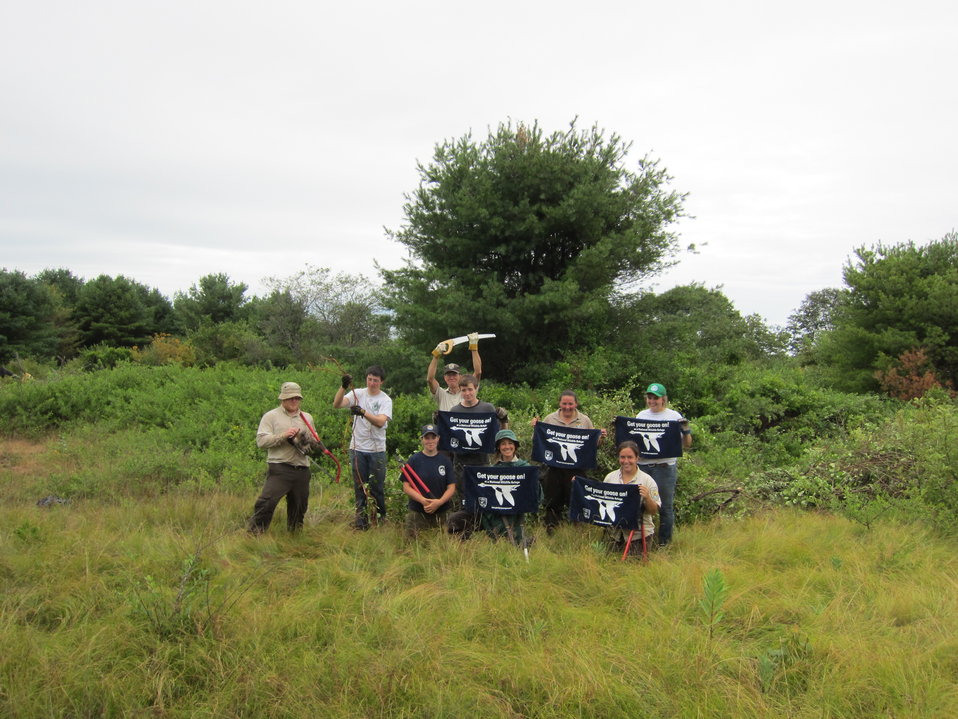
Get Your Goose On!

Standing in front of a morning's hard work.